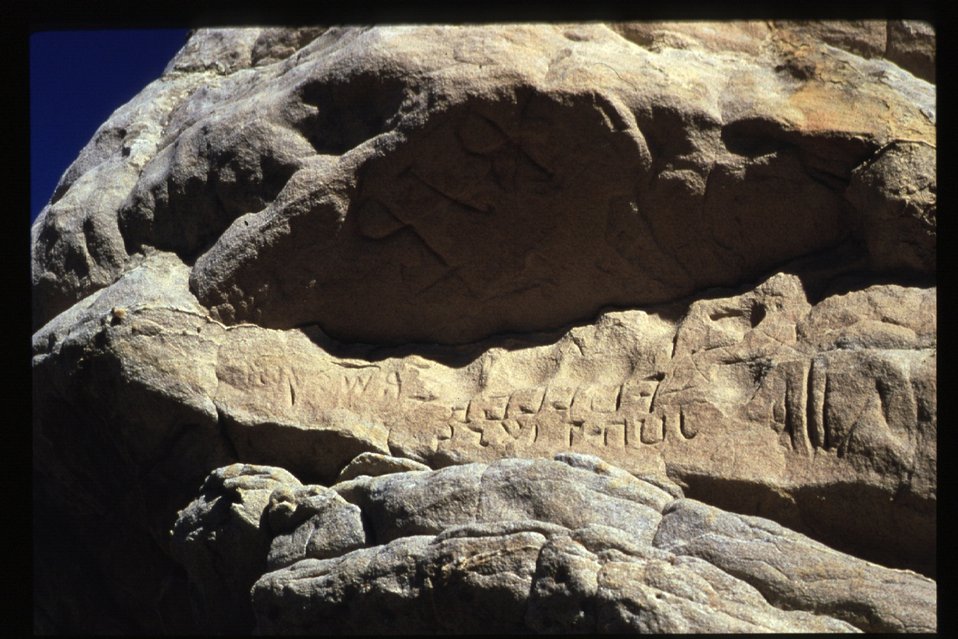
Pioneer writing on rocks Engraving Oregon Trail Reenactment USRD Upper Snake River District